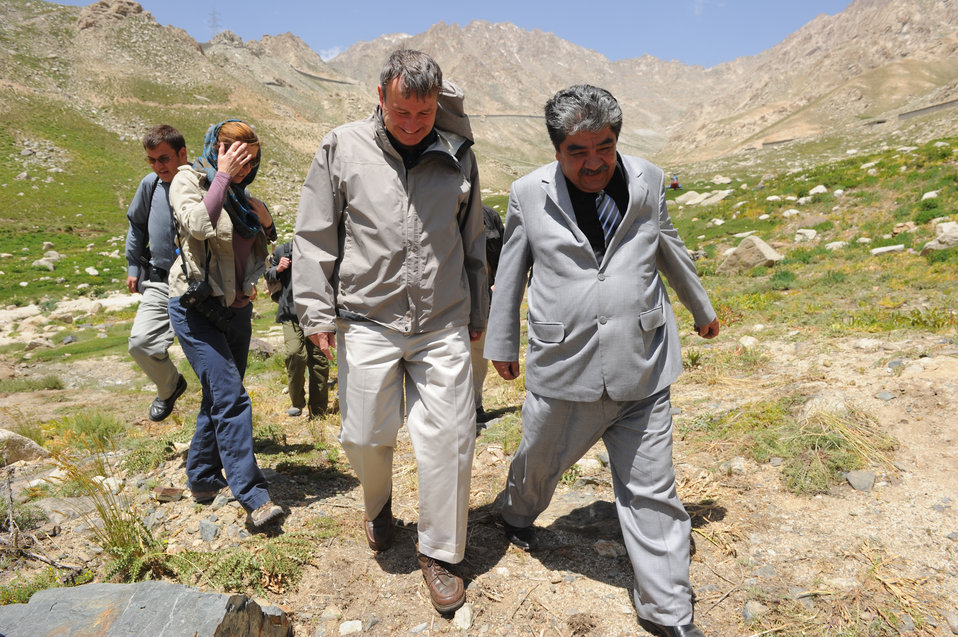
U.S. Ambassador Karl W. Eikenberry and Minister of Public Works Abdul Qudos Niman Hamidi arrive near the South end of the Salang Tunnel to mark the beginning of renovations of the tunnel at the border of Parwan and Baghlan Provinces, Afghanistan, on Wednesday, June 15, 2011. (S.K.Vemmer/Department of State)